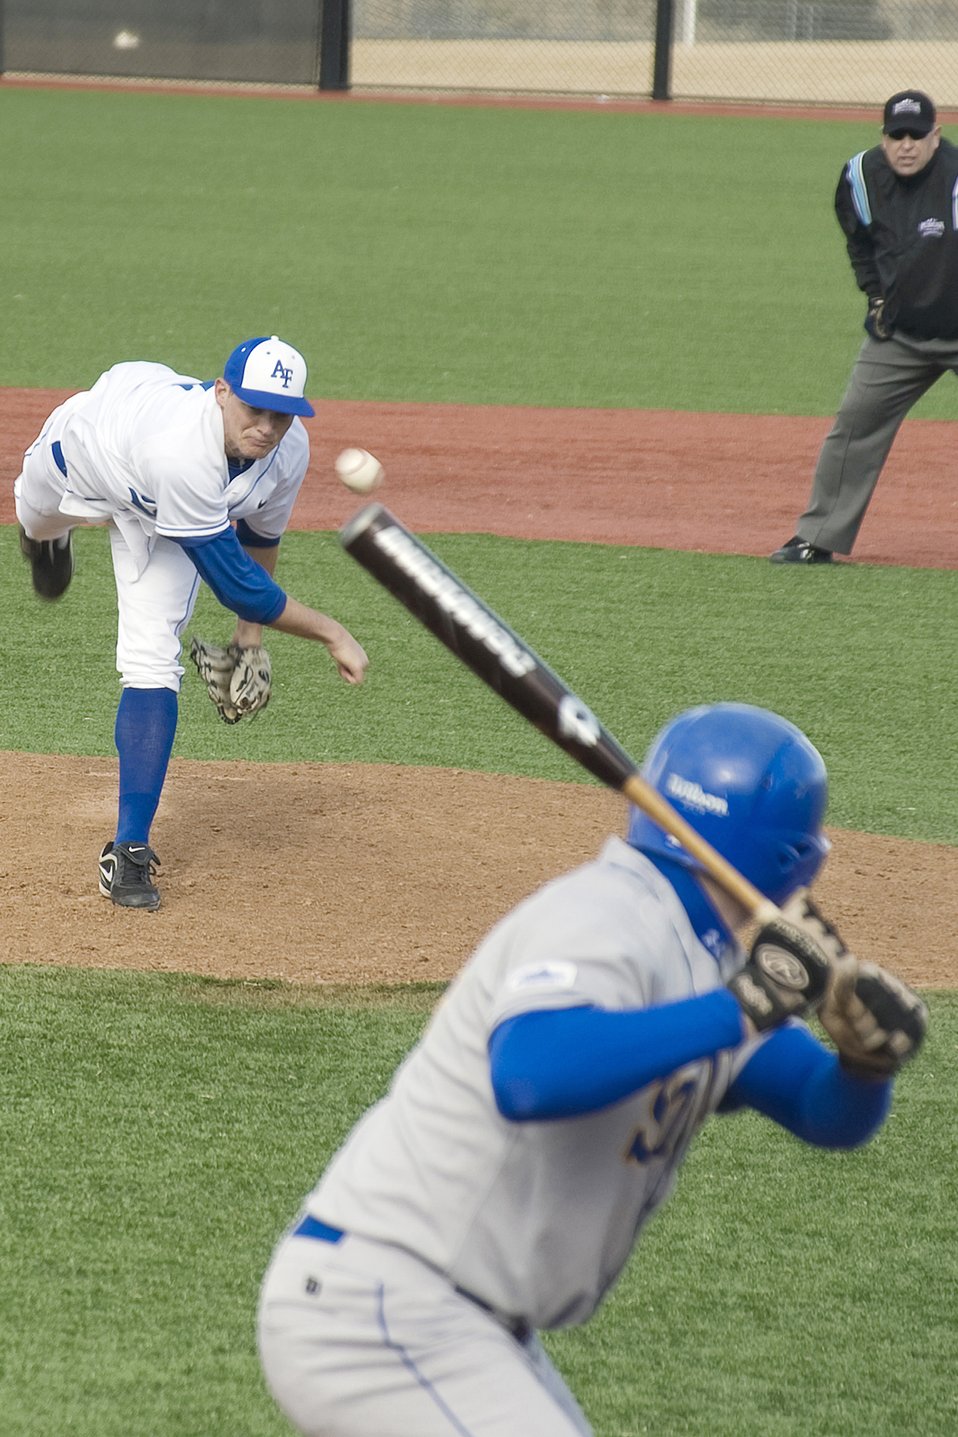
Falcons defeat South Dakota State

Falcon senior pitcher Alex Truesdale follows through on a pitch against South Dakota State during their March 5, 2010, matchup at the U.S. Air Force Academy's Falcon field. The Falcons rallied with 6 runs in the bottom of the 8th inning to win the contest 12-11.